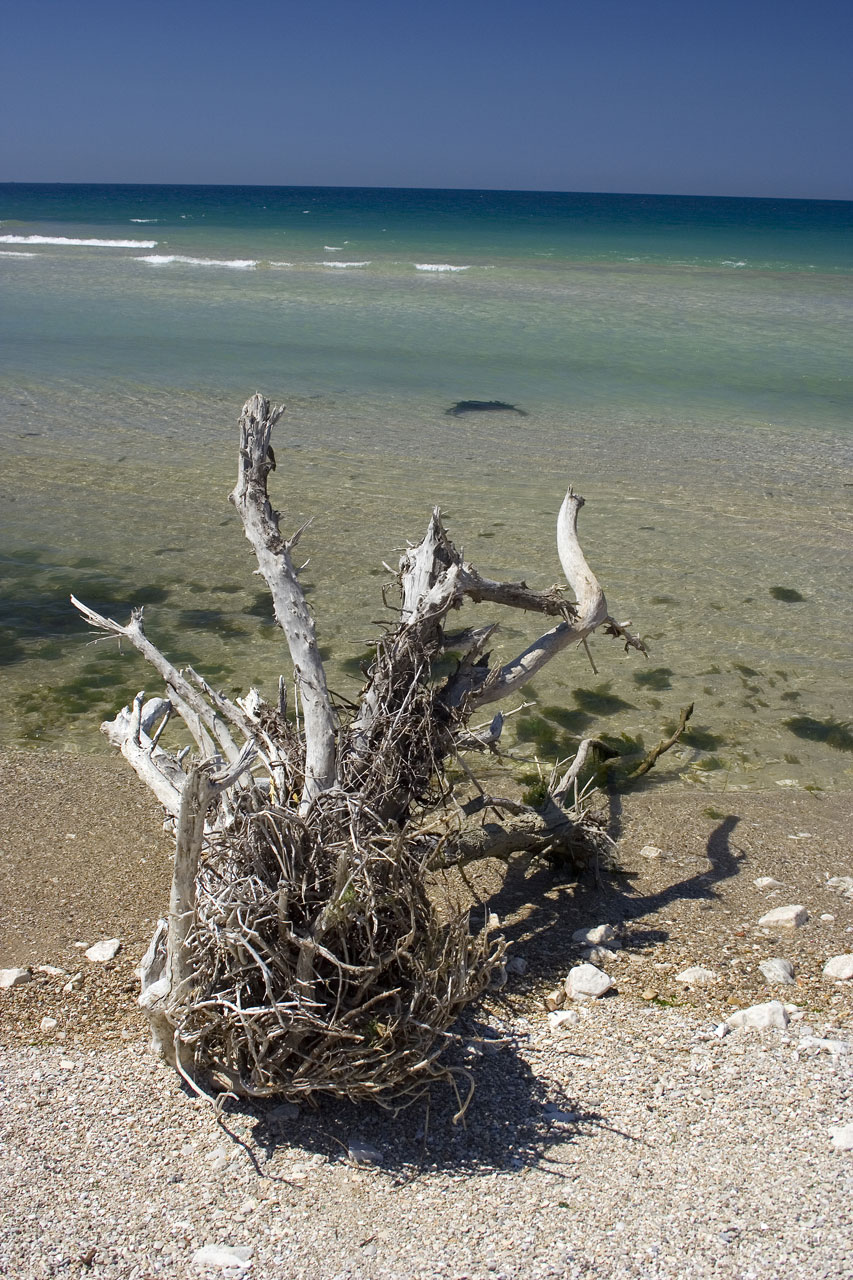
Dry tree on the beach

Dead dry tree on the beach in albania.